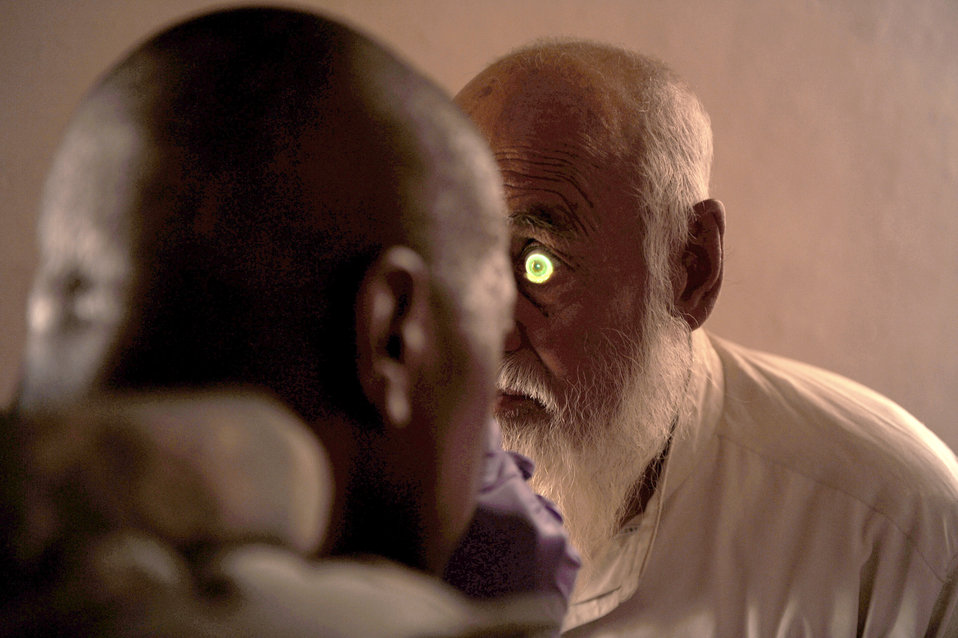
Operation Enduring Freedom

Tech. Sgt. Eric Carter checks the eyes of the Khaleqdad Khan village elder who requested a medical check-up May 24, 2010, in Khaleqdad Khan, Afghanistan. Sergeant Carter is a medic assigned to Provincial Reconstruction Team Zabul.